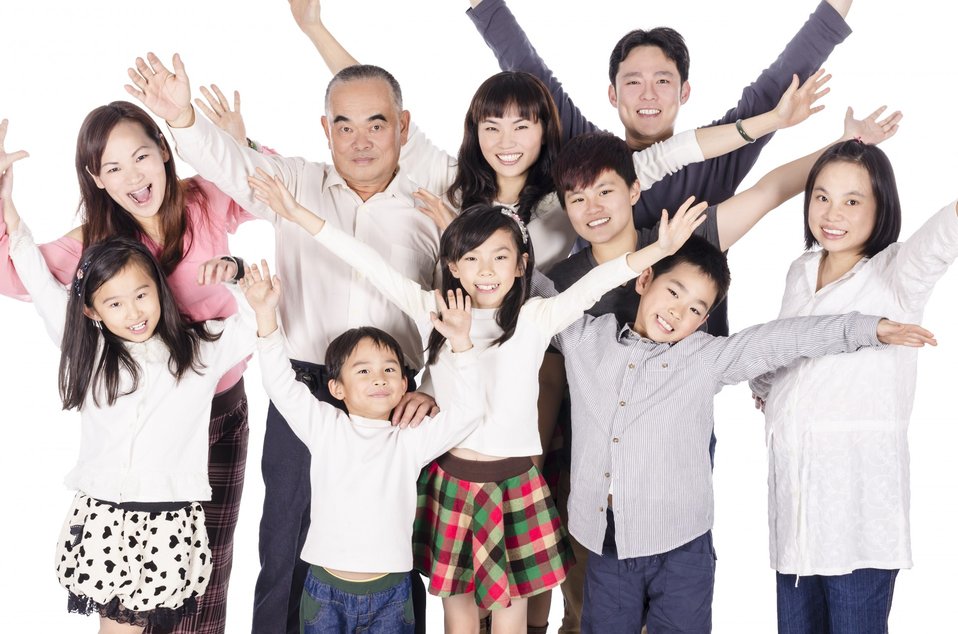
Happy extended family isolated on white

Three, generation, family, thumbs up, people, ten, 10 people, adult, asian, child, children, parent, grand father, daughter, father, grand, male, female, girl, boy, grandchildren, man, woman, together, smile, dad, happy, mother, mum, horizontal, son.